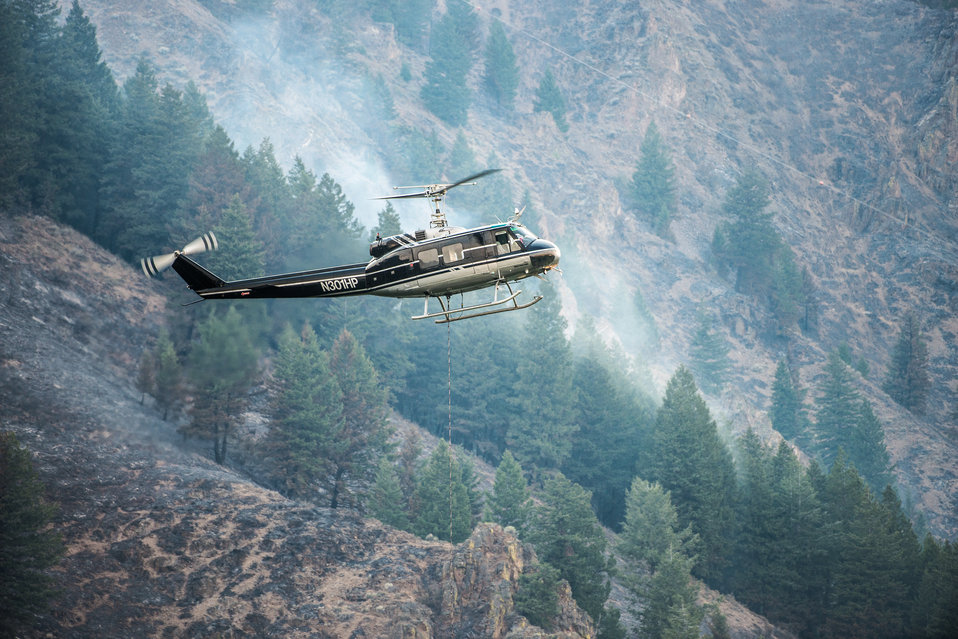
A Bell UH-1H helicopter performs water drops on fires, on the Carbonate Ridge, rising behind the Wood River, during Beaver Creek Fire, west of Hailey, ID, on Monday, Aug 19, 2013.